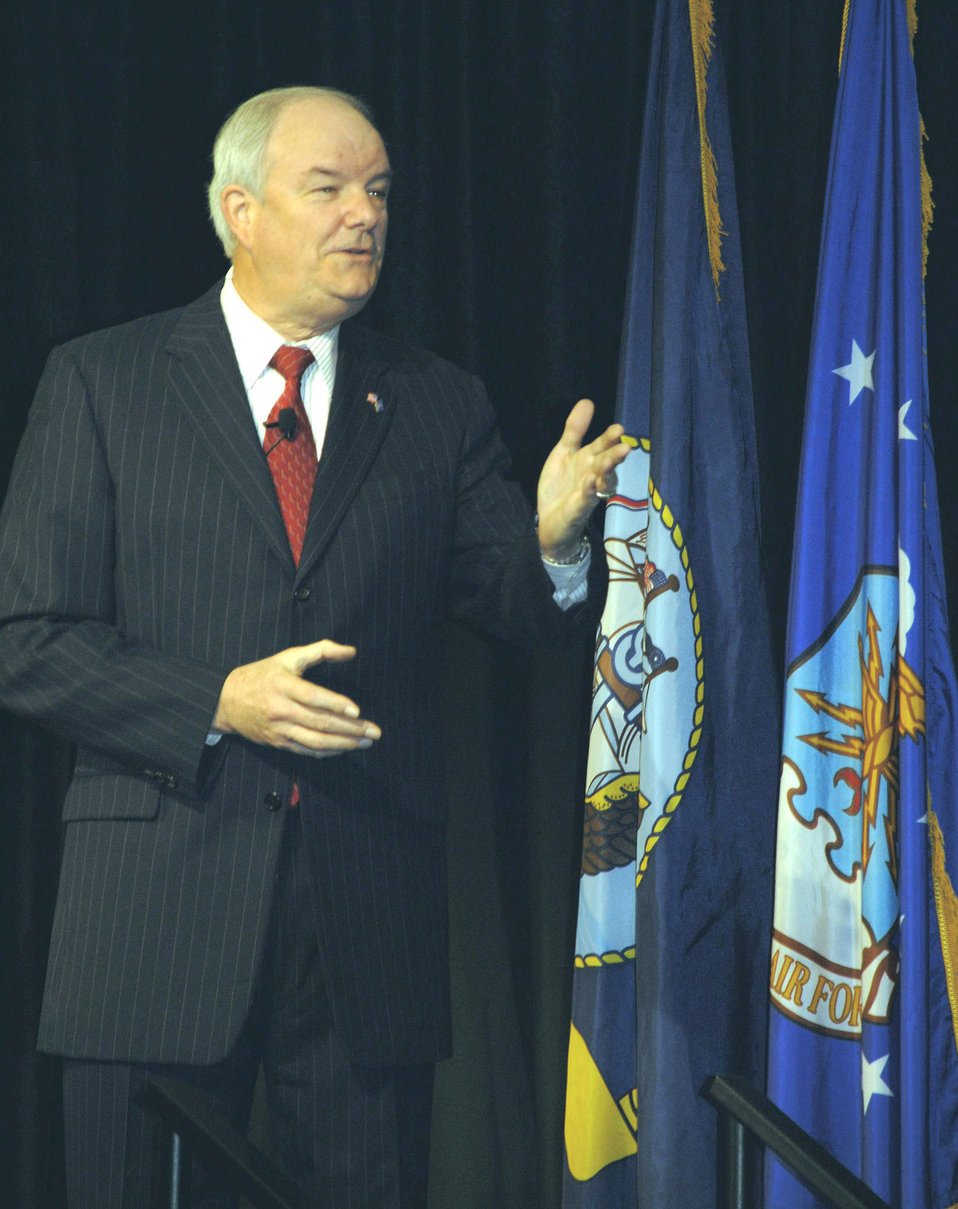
SECAF discusses 'culture shift' in continuous process improvement

Secretary of the Air Force Michael Wynne addresses Department of Defense military and civilian employees during the 2008 DOD Continuous Process Improvement Symposium May 13 in Lansdowne, Va. The Secretary discussed Air Force Smart Operations for the 21st Century initiatives and reaffirmed the Air Force's committment to improving processes across the service.